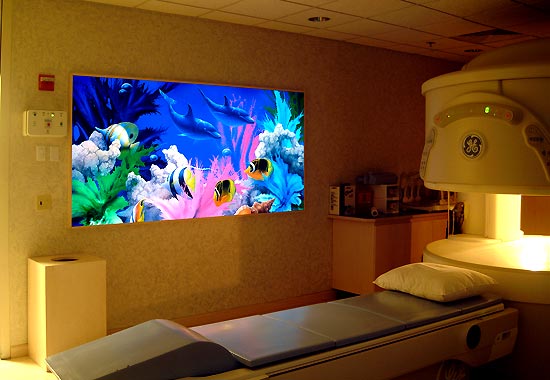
A Child Friendly MRI department